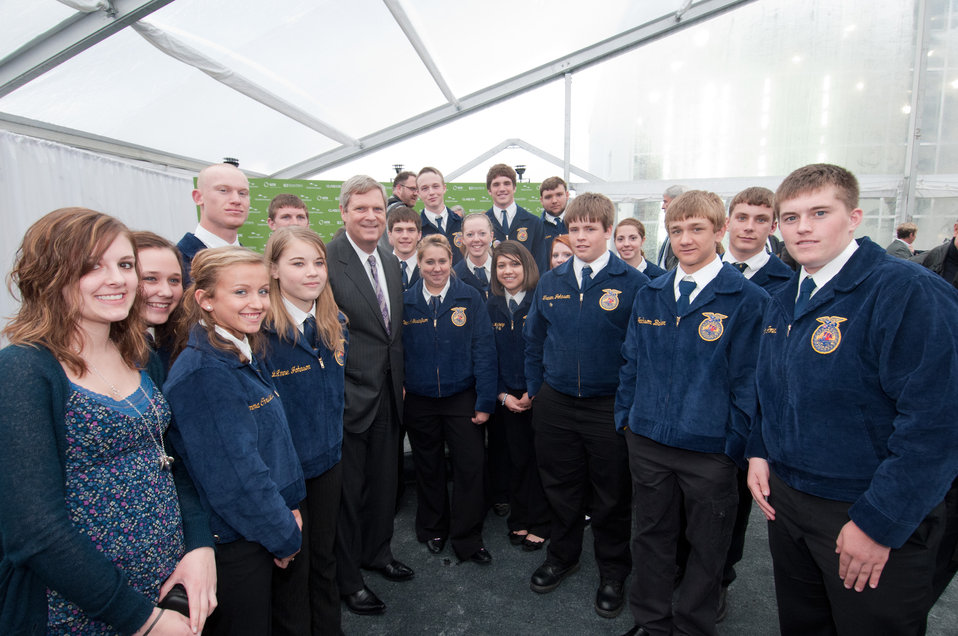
Agriculture Secretary Tom Vilsack encouraged representatives of Iowa's Future Farmers of America (FFA) during his keynote speech at the Grand Opening ceremony of Phase II of the BioProcess Algae facility at Green Plains Renewable Energy (GPRE), Inc. on Friday, Apr. 15, 2011, in Shenandoah, IA.